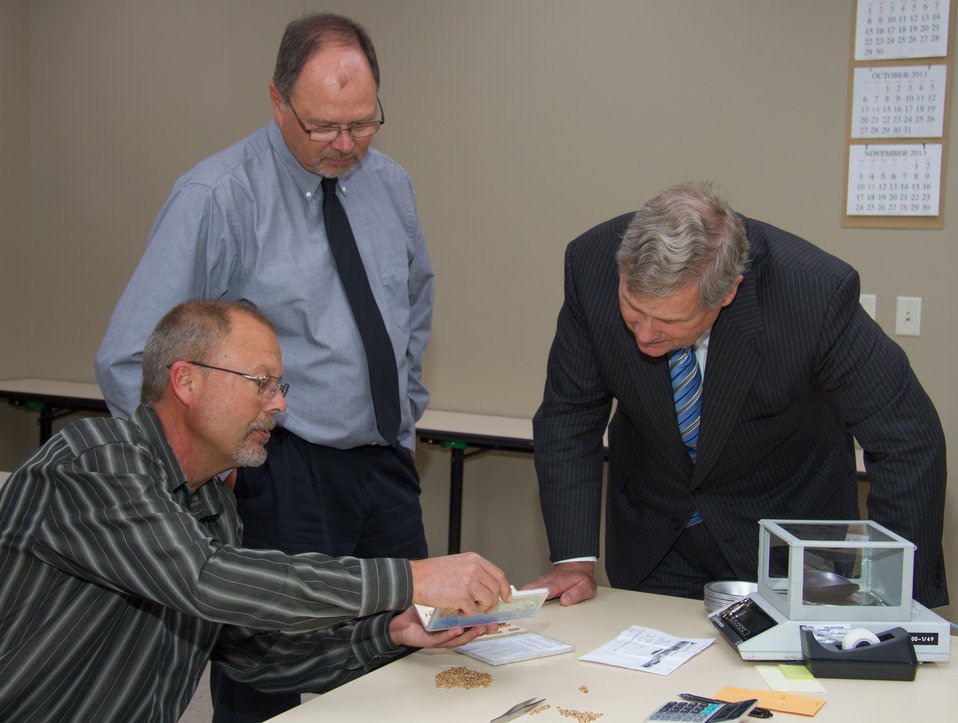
Mark Ruth (l), member of Grain Inspection, Packers and Stockyards Administration (GIPSA), Board of Appeals and Review, explains to Agriculture Secretary Tom Vilsak (r) one of the training aids that the BAR has developed to achieve a high level of accuracy and consistency among graders throughout the Official Inspection System. James Whalen, (c) Chair of the Board of Appeals and Review, observes in Kansas City, MO, on Wednesday, October 23, 2013.